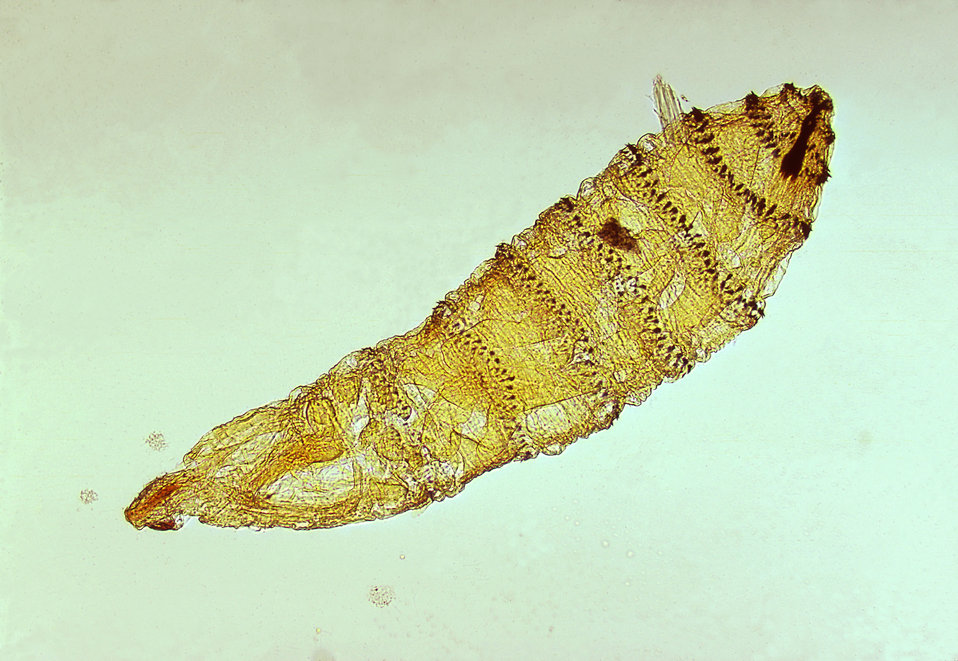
First instar larva of Cuterebra.